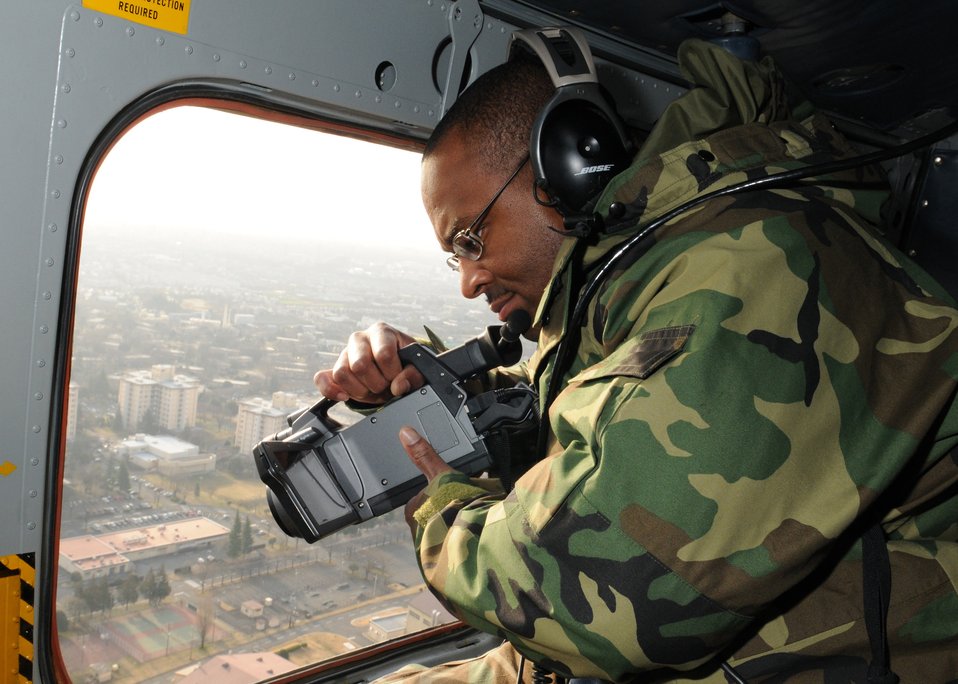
CES Airman maps base 'hot spots'

Master Sgt. Joseph Hudson, 374th Civil Engineer Squadron infrastructure superintendent, uses an infrared camera March 17 to detect leaks in the heat distribution system at Yokota Air Base, Japan. Pilots from the 459th Airlift Squadron flew Sergeant Hudson on six missions aboard UH-1N helicopters to take video of the entire distribution system.